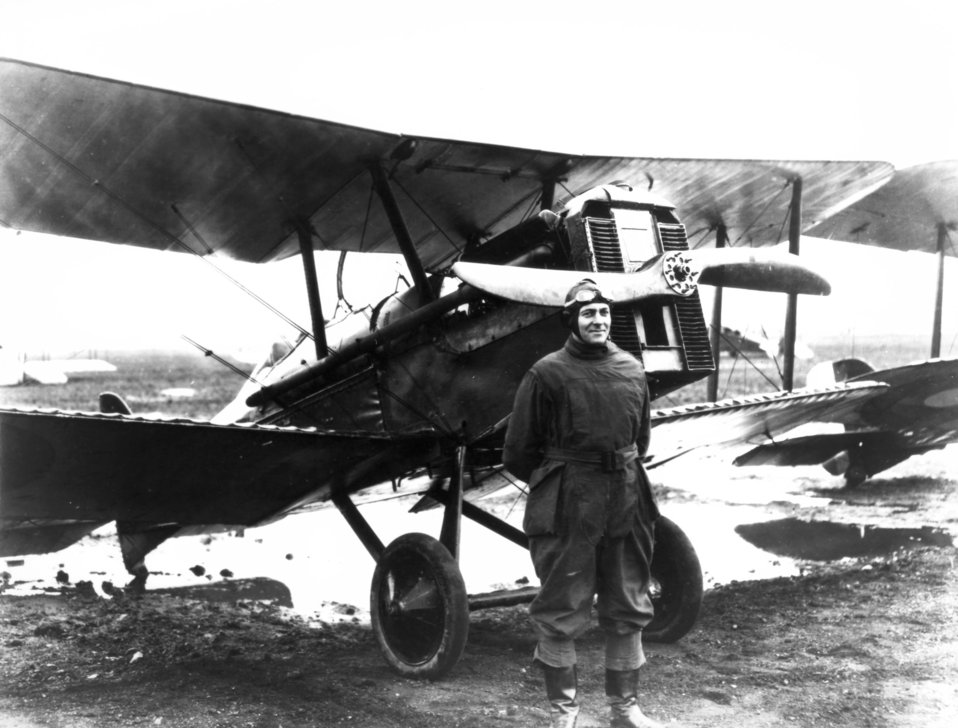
Colonel H.M. Hickam in front of S.E. 5

EARLY YEARS -- Colonel H.M. Hickam in front of S.E. 5, Bolling Field Air Tournament, May 14-16, 1920.